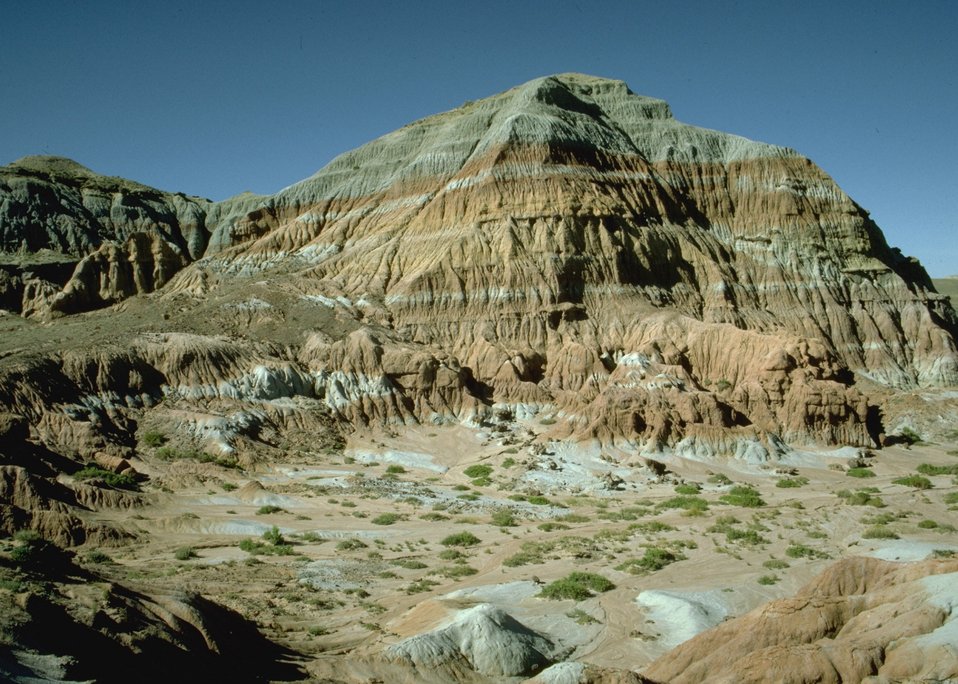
View of Honeycomb WSA, Worland Field Office.